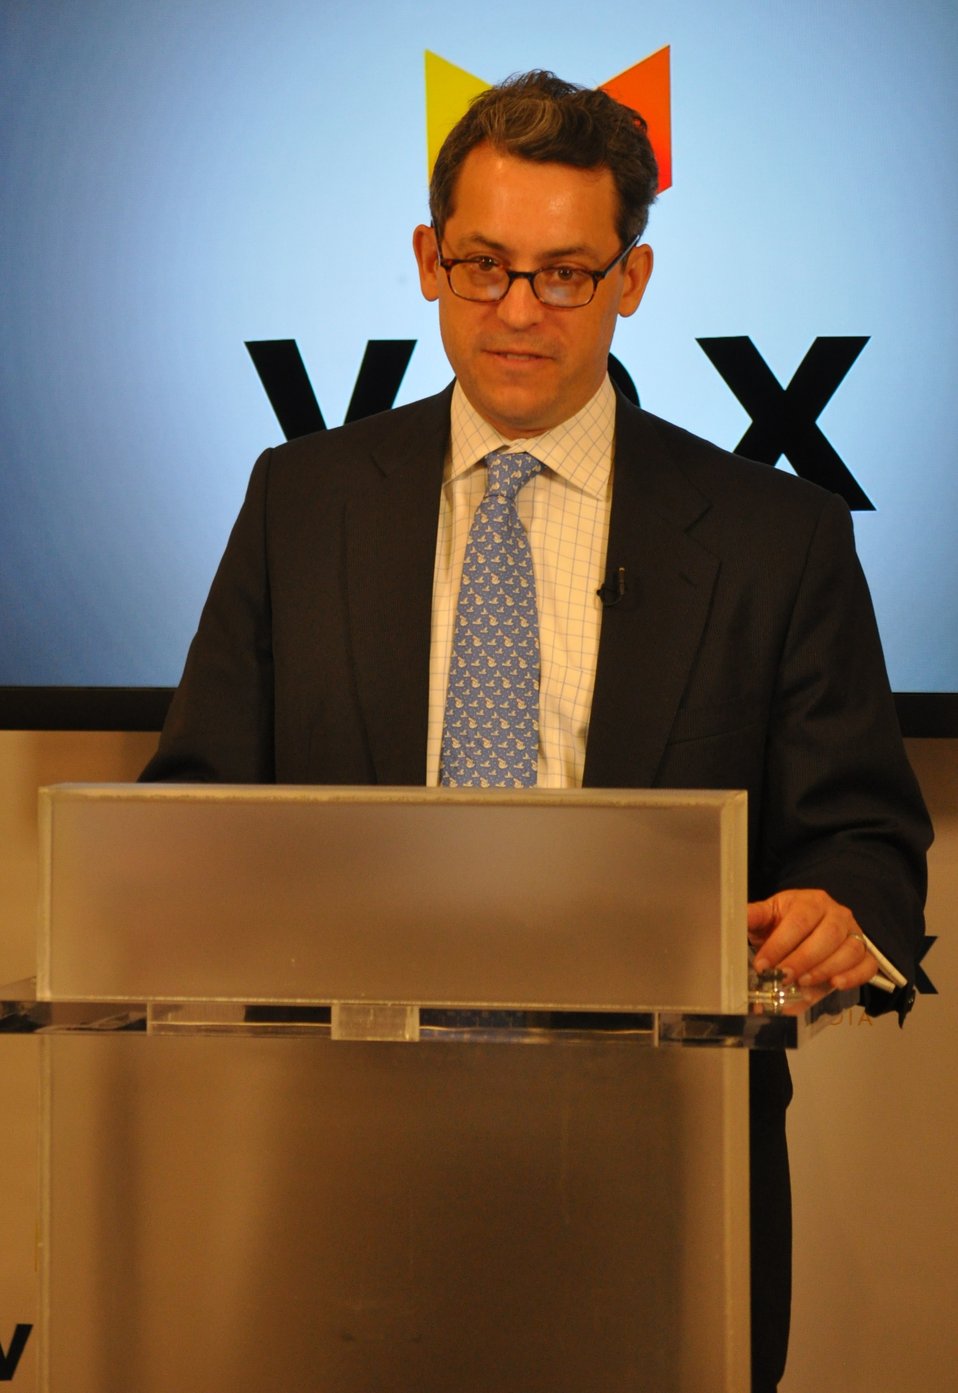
Broadband Challenges and Opportunities, at Vox Media - DSC 0690